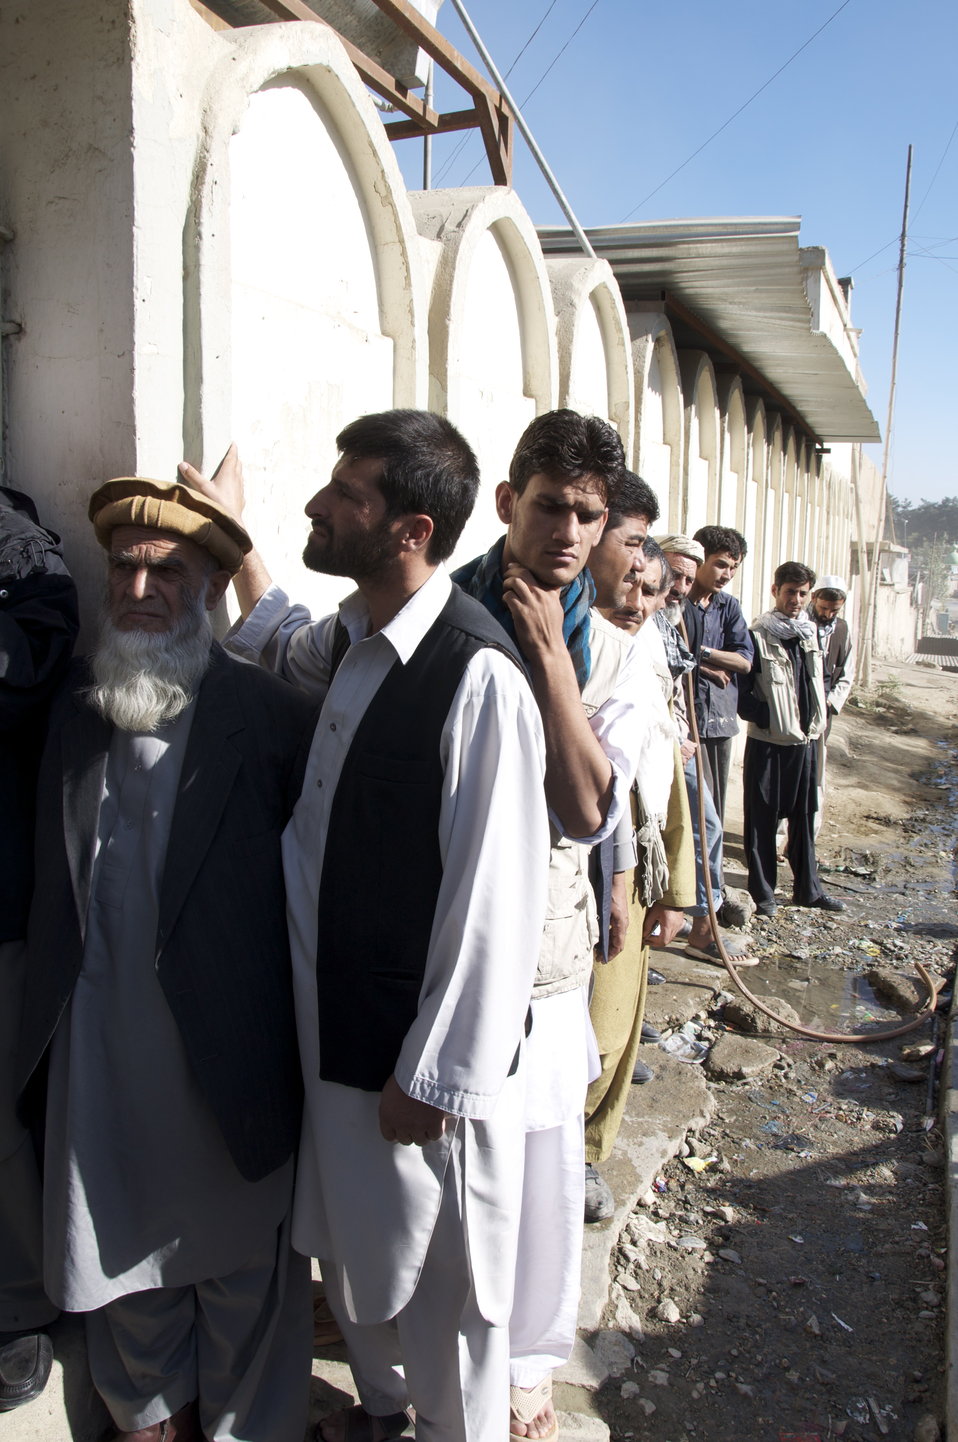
People Lined up to Vote